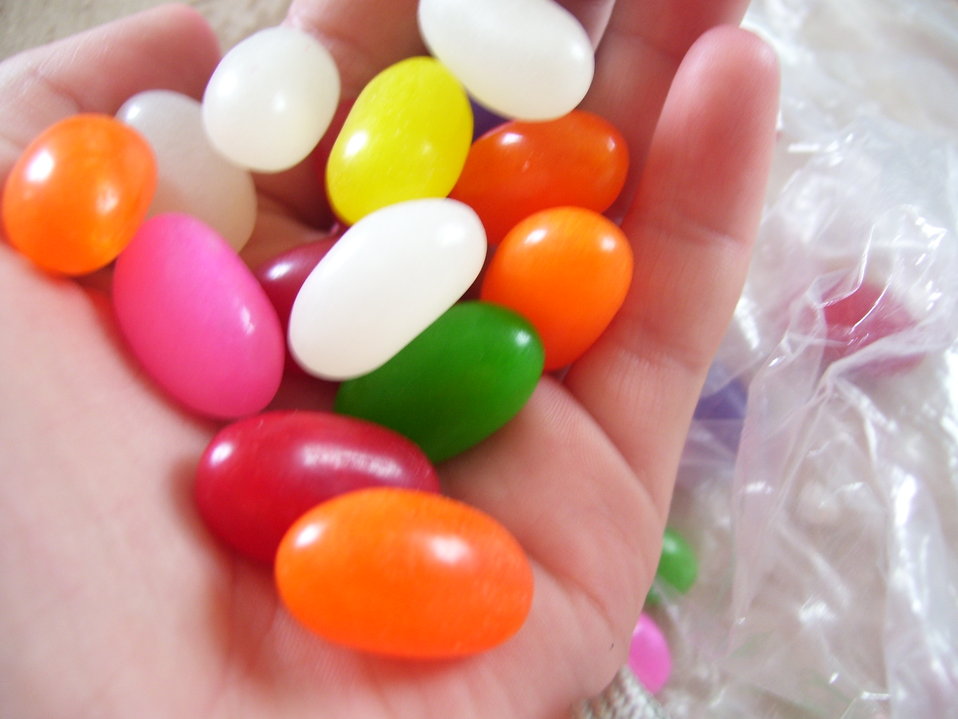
This is a picture i took for the Candy article.